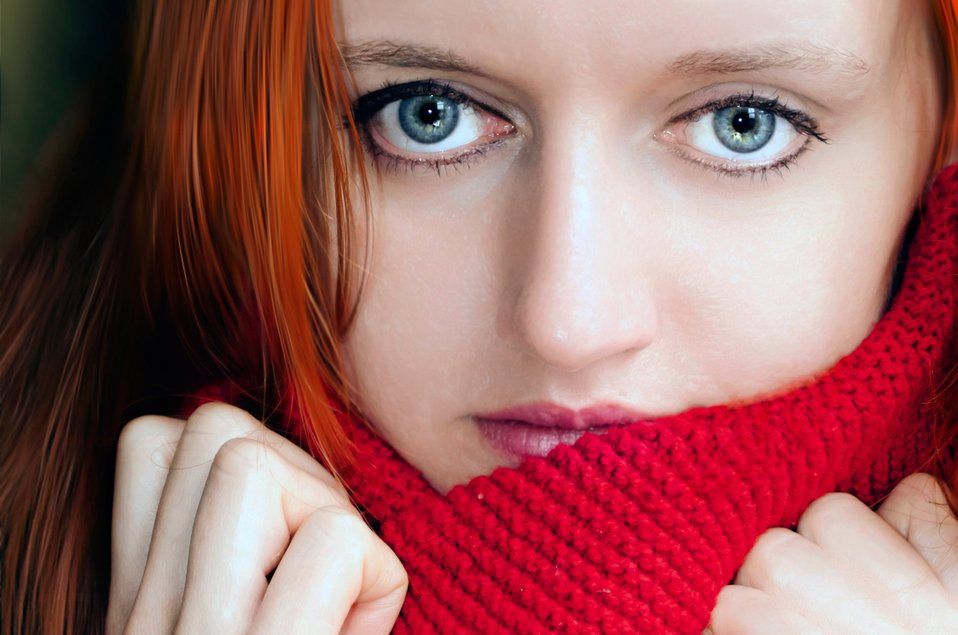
Woman and a red scarf.